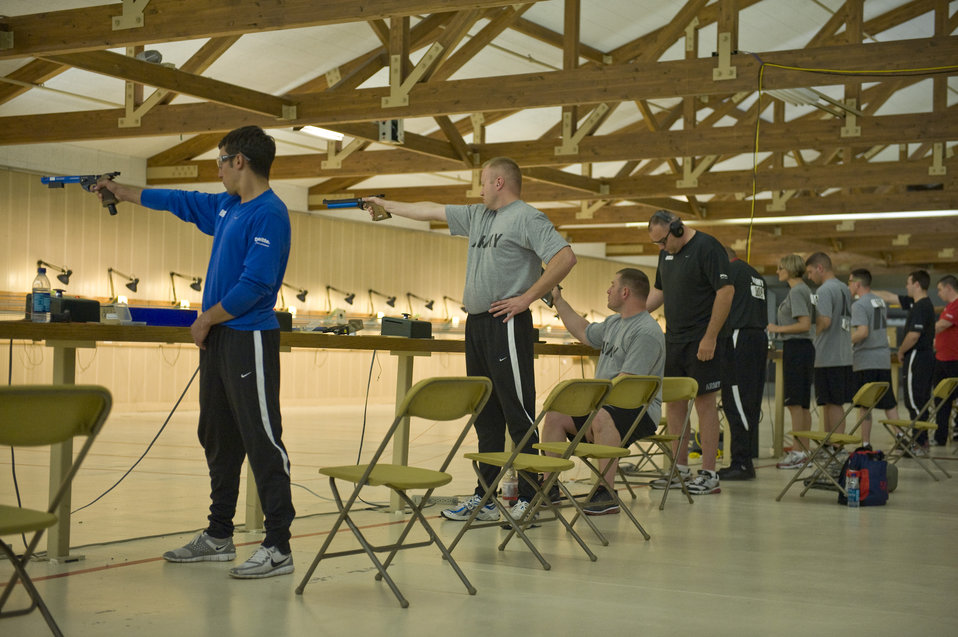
Airmen pull the trigger and medal at Warrior Games

Staff Sgt. Marc Esposito takes aim during the Warrior Games pistol competition May 13, 2010, at the Olympic Training Center in Colorado Springs, Colo. Sergeant Esposito took gold in the event.